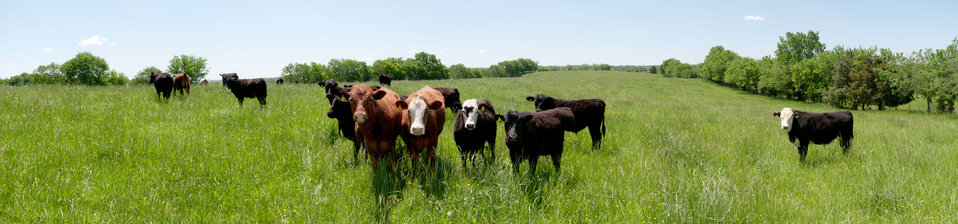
(Virtual panorama) Some of the 65 cattle and 30 calves that are born, raised and roam the pastures of Brookview Farm Manakin-Sabot, VA, eating grass or resting under shade trees on Thursday, May 5, 2011 in one of many farms participating with Fall Line Farms a local food cooperative in the Richmond, VA area that offers a wide variety of household food staples and specialty items on an ever changing inventory of fruits, vegetables, meats, soaps, eggs, cheeses, flowers, honey, pastas, sauces, syrups, baked goods, mushrooms, flour and grains. Suppliers post what they have on a Lulus Local Food online listing and can make their selection. Every Thursday suppliers deliver orders to, one of several pick-up points, designated by the customers in or around the Richmond area.